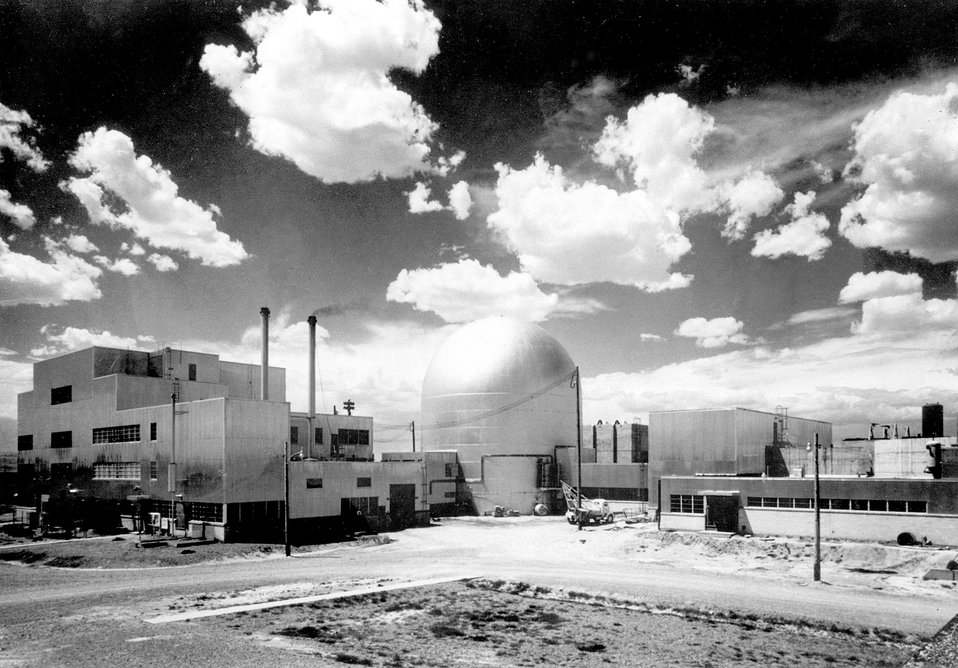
General View EBR-2.
c.1964